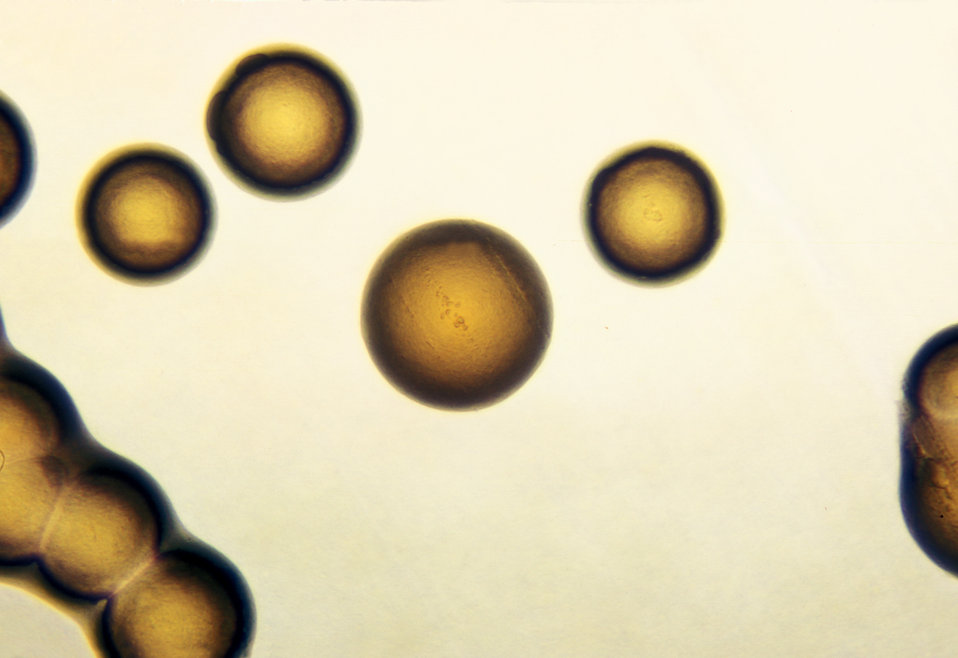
Photomicrograph of Neisseria gonorrhoeae colonies growing on GC base media with IsoVitalex after 24 hours.